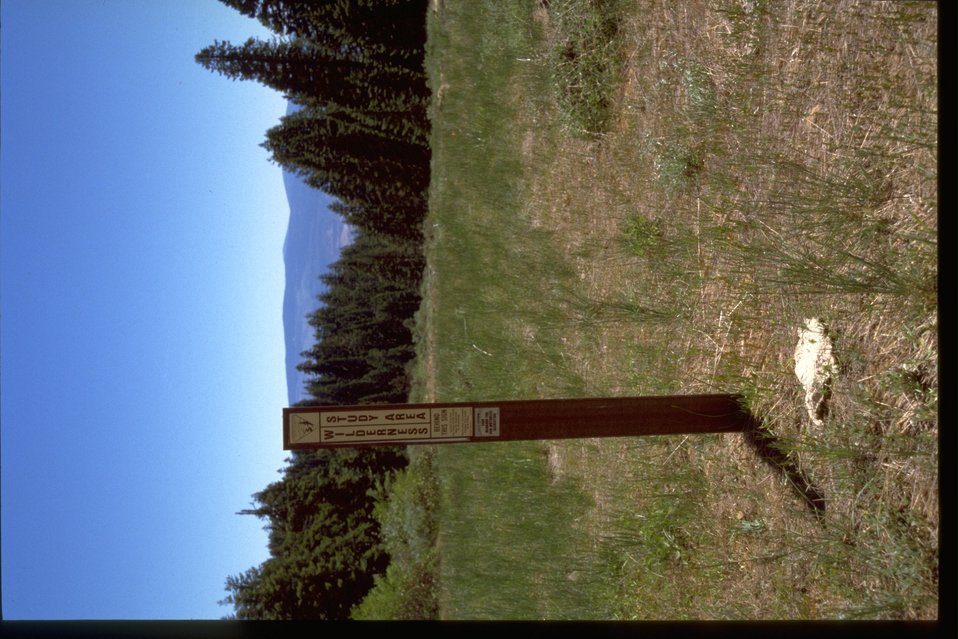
Wilderness Study Area sign.